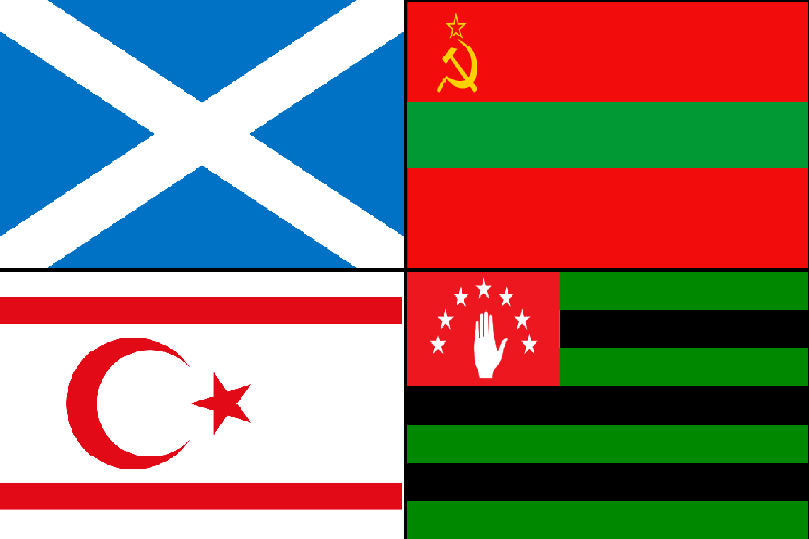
Čeština: Vlajky čtyřech separatistických a potencionálně separatistických regionů, Severního Kypru, Skotska, Podněsteří a Abcházie Flags of four separatist and potentially separatist regions: Northern Cyprus, Scotland, Transnistria, and Abkhazia